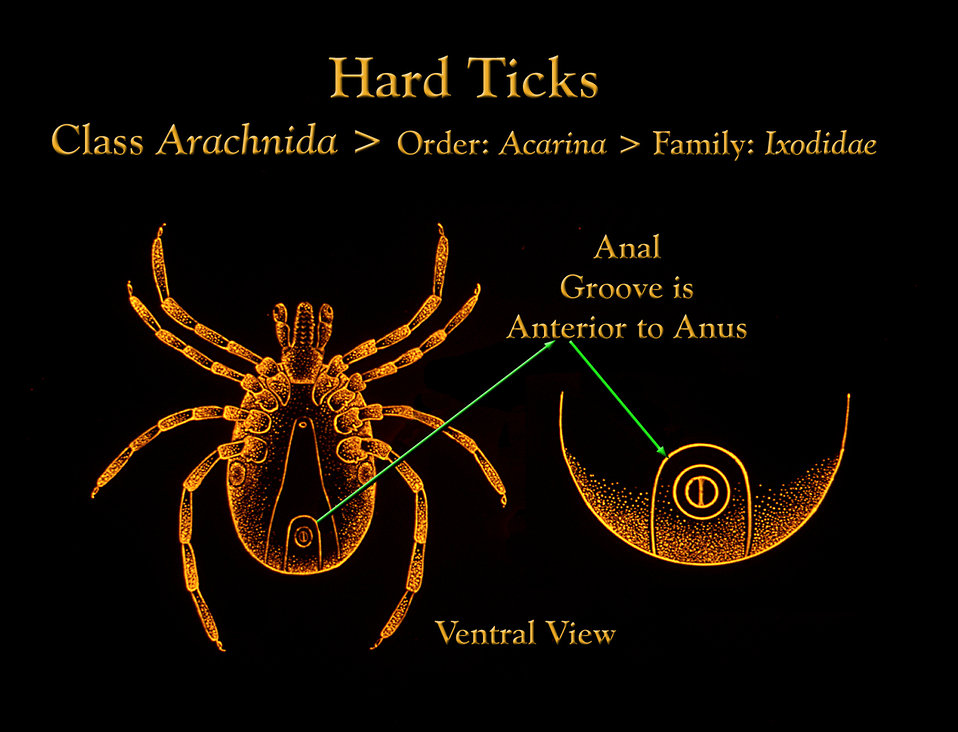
Members of the genus Ixodes are easily distinguished by their conspicuous anal groove, which is anterior to the anus.